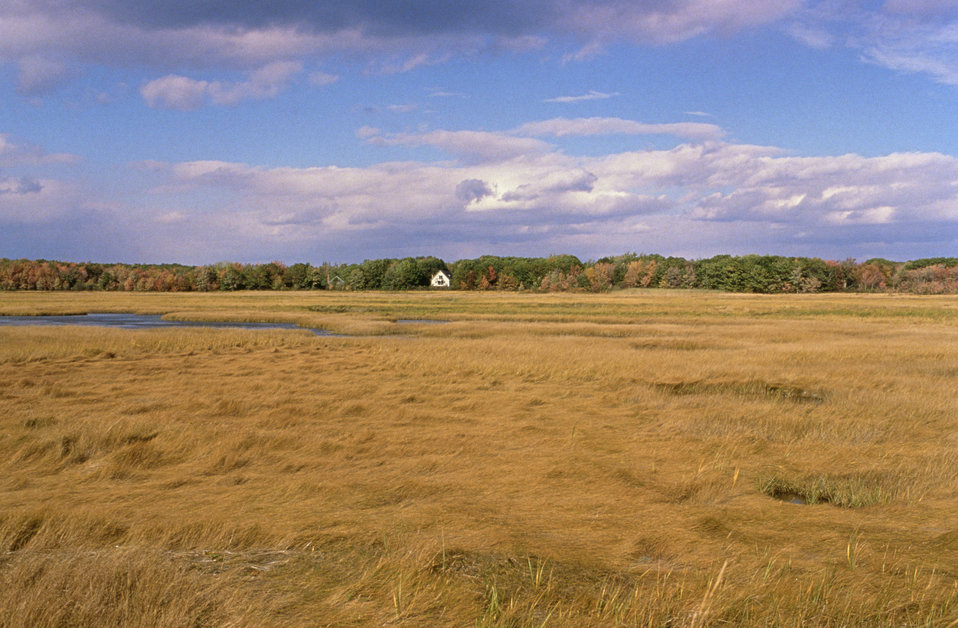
New England coastal marsh

Rachel Carson National Wildlife Refuge, ME